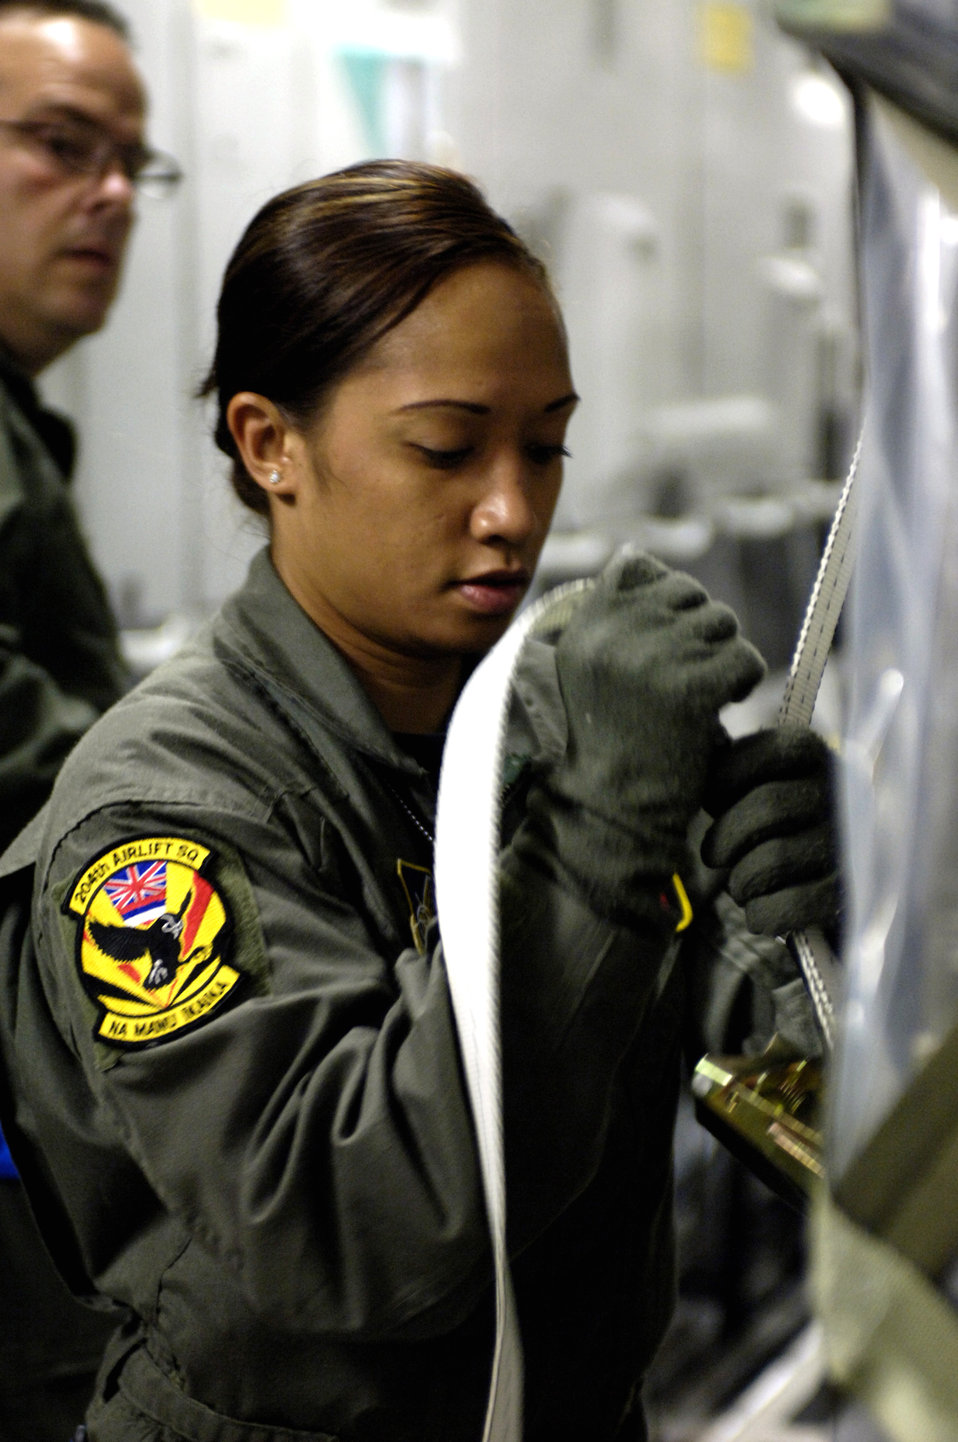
Loadmasters help reposition Australian Defense Forces

Staff Sgt. Joleen Manuia tightens a cargo strap on an equipment pallet on a C-17 Globemaster III at Royal Australian Air Force Base Townsville, Australia, on Sunday, May 28, 2006. Sergeant Manuia is a C-17 Globemaster III loadmaster with the Hawaii Air National Guard's 204th Airlift Squadron. She is one of the Air Force crew members helping move equipment and troops from the Solomon Islands to Australia, repositioning Australian Defense Forces to support peace operations in East Timor.